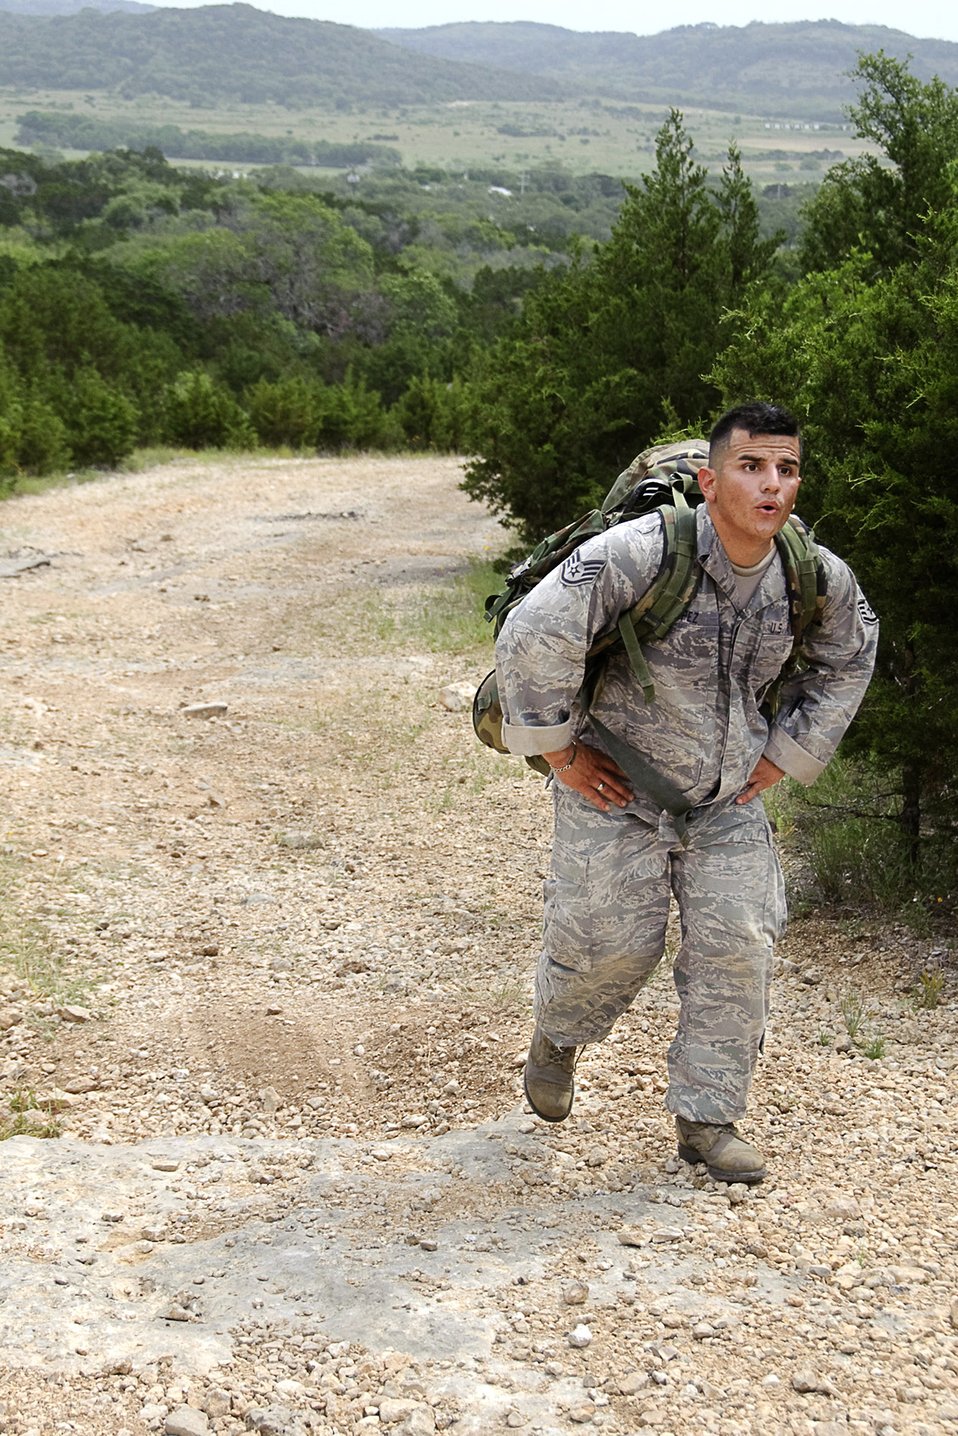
National Police Week 2010

Staff Sgt Luis Lopez of the 902nd Security Force Squadron prepares to crest a hill during the obstacle course and ruck march event held May 12, 2010, during National Police Week at Camp Bullis, Texas. The event was part of National Police Week and required participants to carry at least 45 pounds in the pack. Lopez's team placed third with a time of 1:07:54.